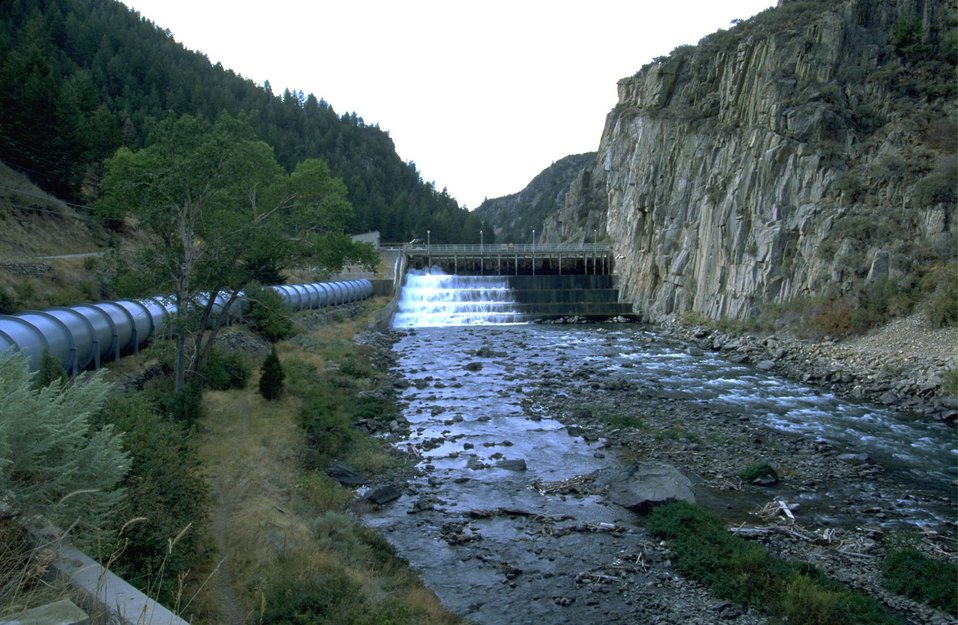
Madison Dam and Flow Line